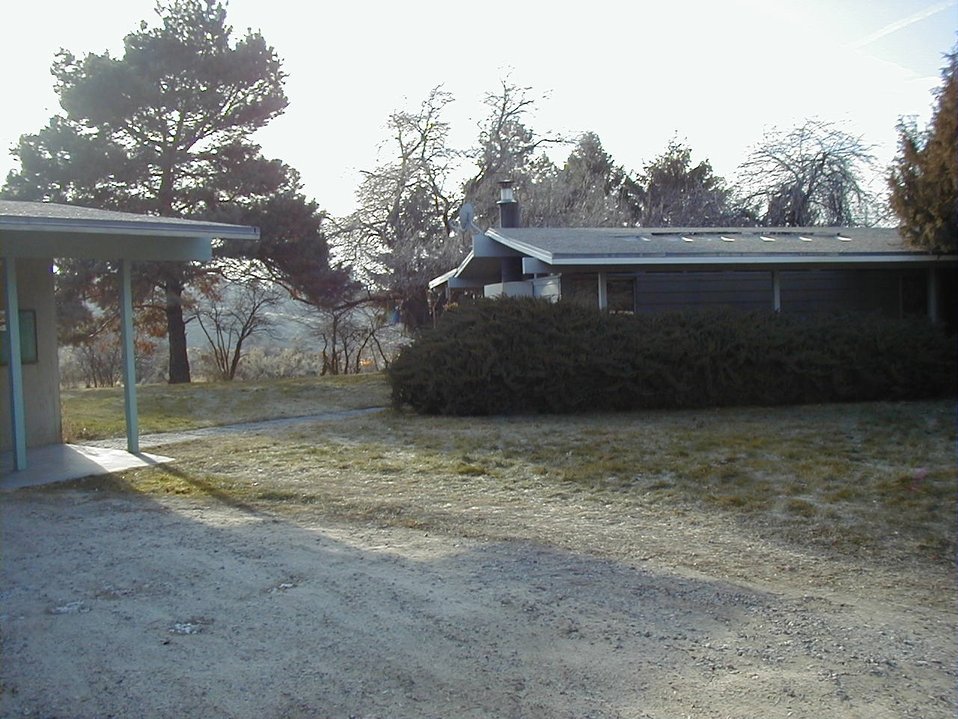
Environmental Education McCord house Boise Front Foothills Fire Safety and Urban interface Four Rivers Field Office LSRD Lower Snake River District